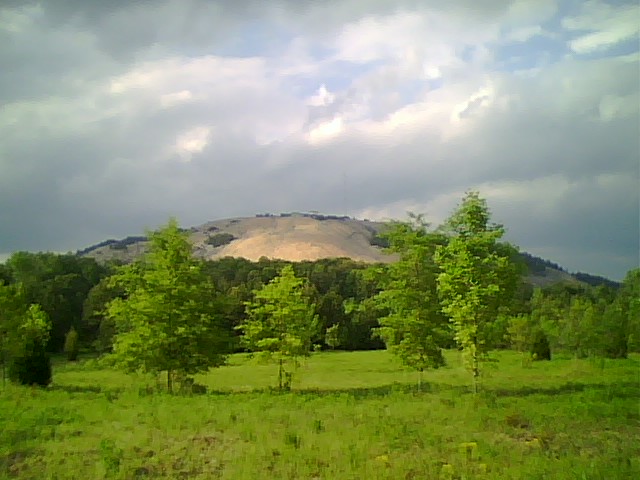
To show the back of Stone Mountain in Georgia as taken from the Songbird Habitat Trail, used as venue for archery and track cycling at the 1996 Summer Olympics in Atlanta.